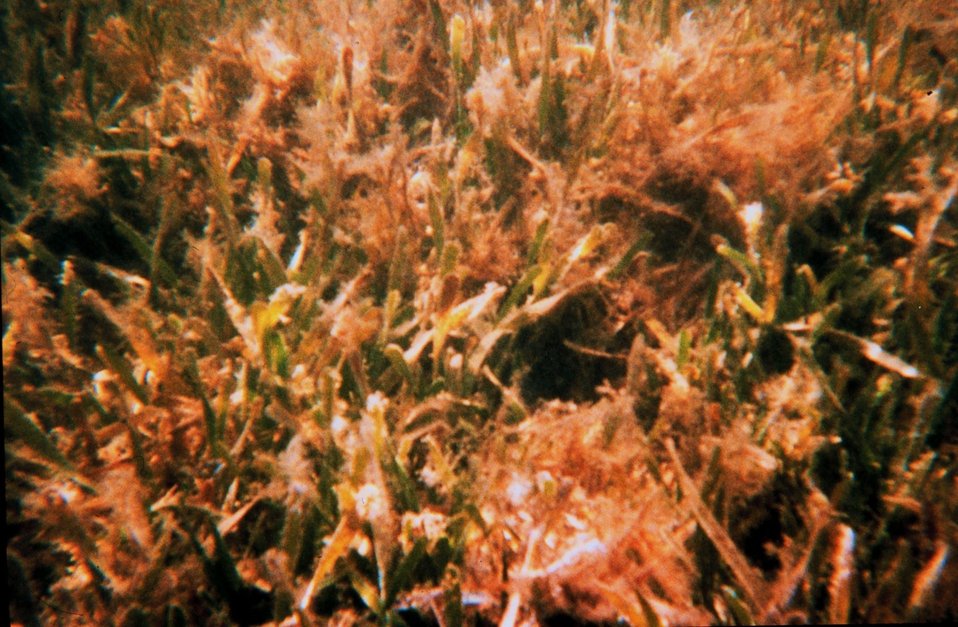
Seagrass extending offshore from mangrove shoreline Red algae covering seagrass is particularly important as chemical cue for larval settlement of spiny lobster post-larvae